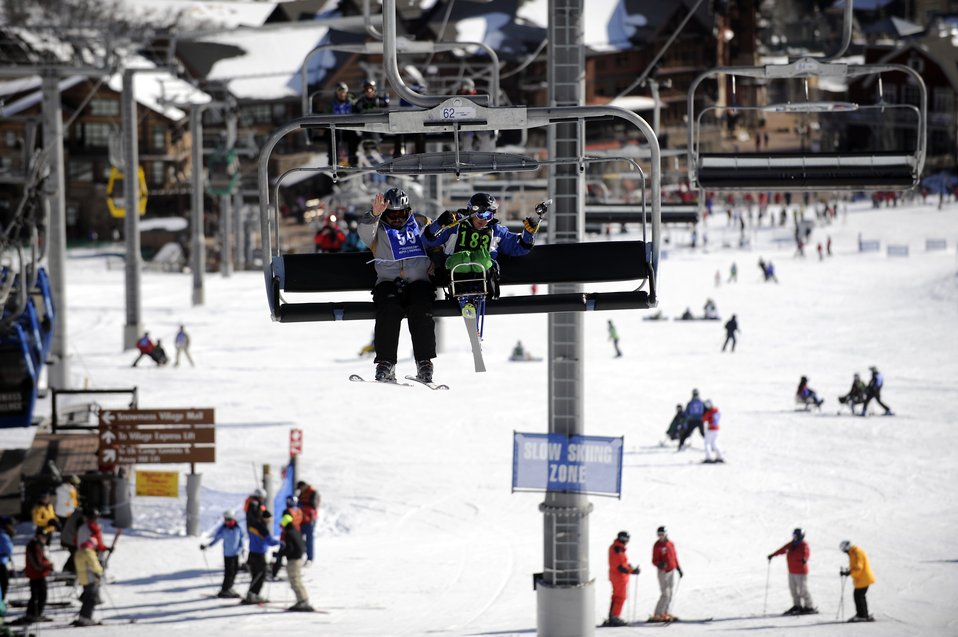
23rd National Disabled American Veterans Winter Sports Clinic

Mark Finken and Senior Airman Kevin Krogh wave at people below them as they ride the ski lift to the top of Snowmass Village Apr. 2 during the 23rd National Disabled American Veterans Winter Sports Clinic in Snowmass Village, Colo. Airman Krogh lost both legs in a major car accident in 2007 and this is his first year attending the sports clinic. Airman Krogh is assigned to Fort Sam Houston in San Antonio. Finken is a ski instructor for the sports clinic.